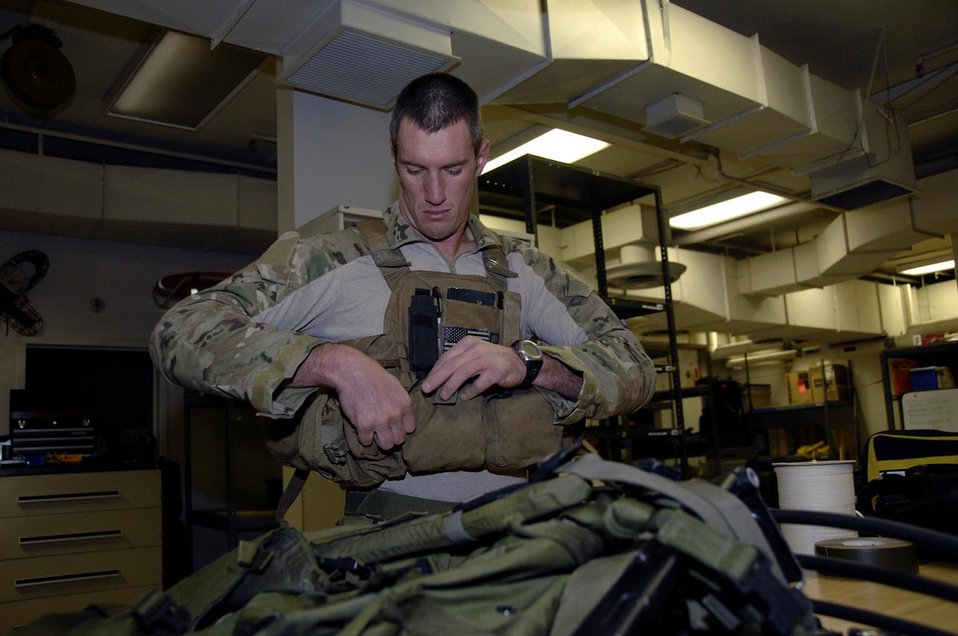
Guard members assist car accident victim

Technical Sgt. Sean Kirsch dons his tactical gear for a routine training mission March 10 at Moffett Federal Airfield, Calif. Sergeant Kirsch used his specialized life saving skills to assist an accident victim March 9 near Suisun, Calif. Sergeant Kirsch is a pararescueman from the 131st Rescue Squadron of the California Air National Guard.